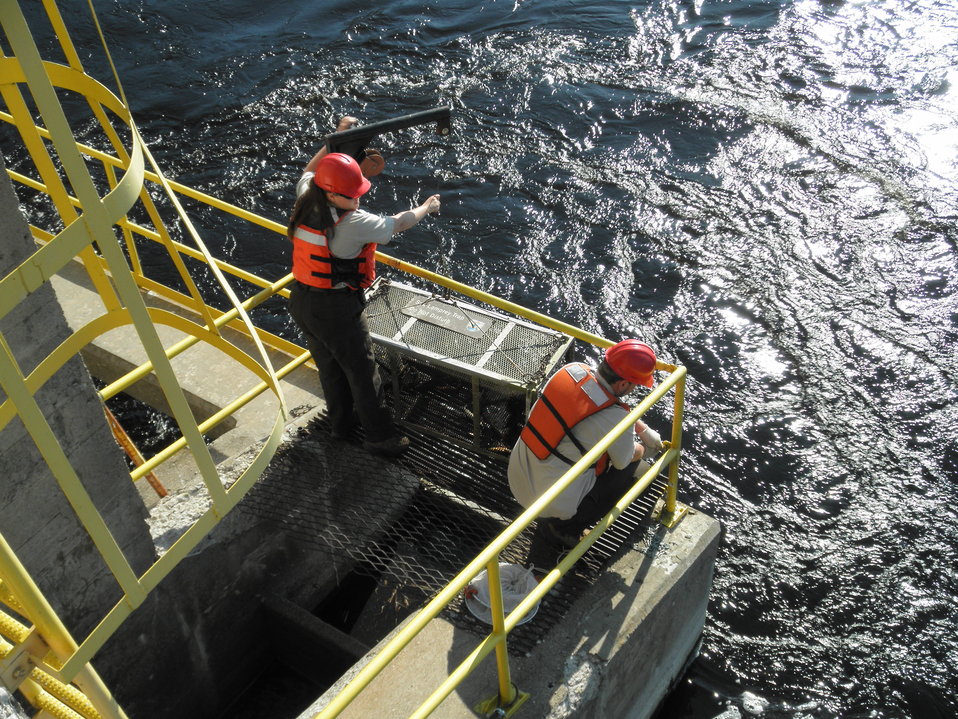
Service Employees Checking a Sea Lamprey Trap in the Menominee River, Michigan.